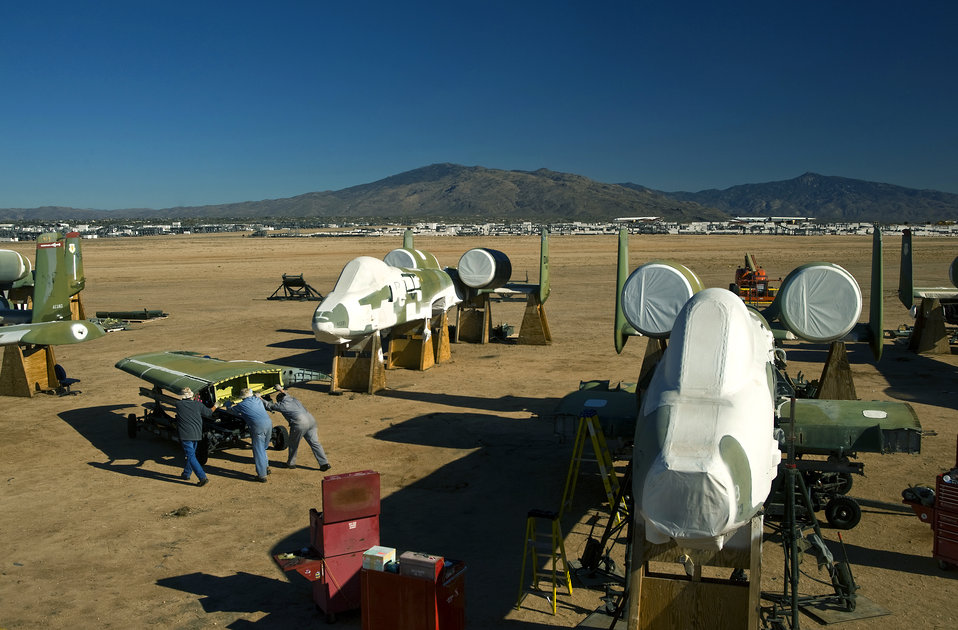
A-10 Hog Up

Aircraft mechanics wheel away the wings of an A-10 Thunderbolt II that has been sitting in the 309th Aerospace Maintenance and Regeneration Group